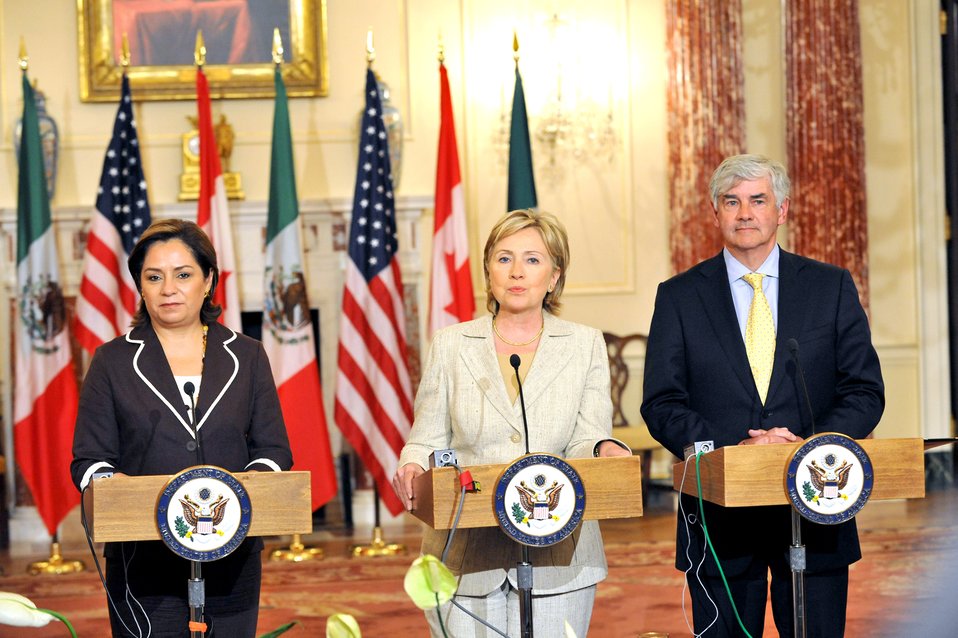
Secretary Clinton Hosts North American Trilateral Ministerial

U.S. Secretary of State Hillary Rodham Clinton hosts the North American Trilateral Ministerial with Her Excellency Dr. Patricia Espinosa Cantellano, Secretary of Foreign Relations of Mexico and The Honorable Lawrence Cannon, P.C., M.P., Minister of Foreign Affairs of Canada, in the Benjamin Franklin Room of the U.S. Department of State in Washington, DC July 16, 2009.